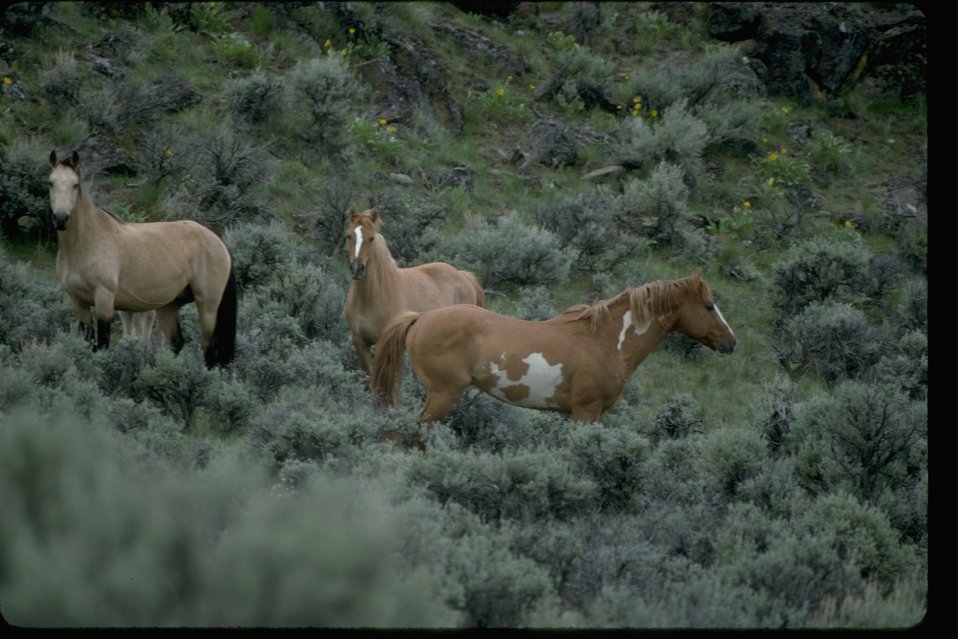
South Steens Wild Horses on the range at the South Steens Herd Management Area in the Burns District, southeastern Oregon.